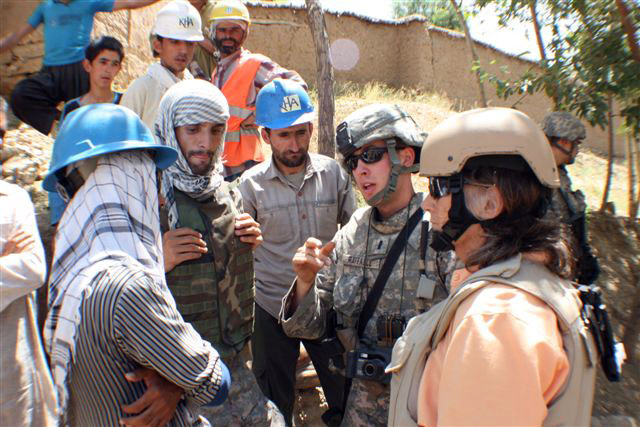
Air Force engineer discusses building relationships in Afghanistan

First Lt. Anthony Raffaele is deployed with the Kapisa/Parawan Provincial Reconstruction Team in Afghanistan. The team is there building schools and streets in order to help empower Afghans and encourage them to separate from insurgents. Lieutenant Raffaele is assigned to the 90th Civil Engineer Squadron at F.E. Warren Air Force Base, Wyo.